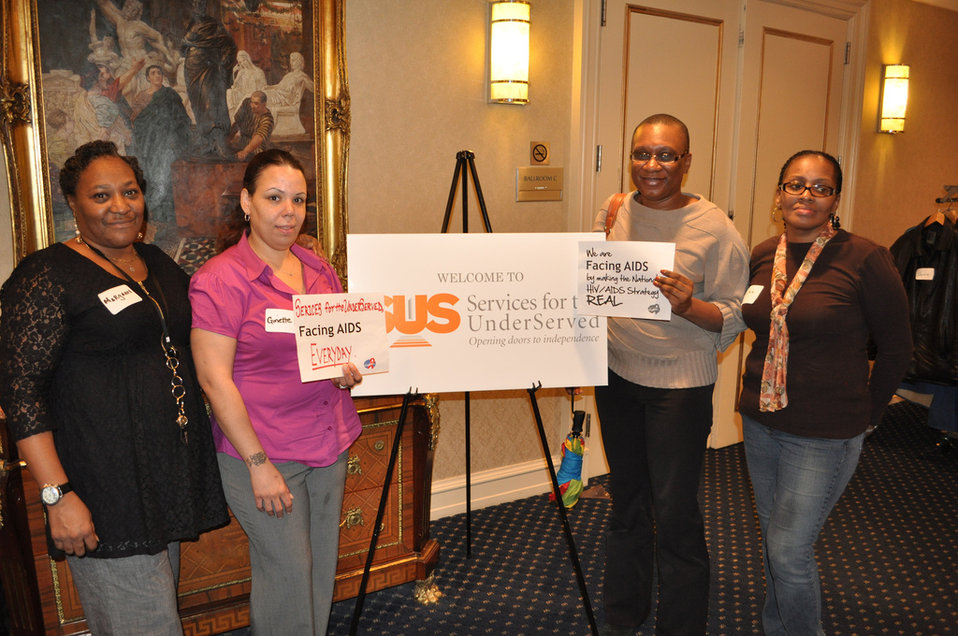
We are Facing AIDS through NHAS-14